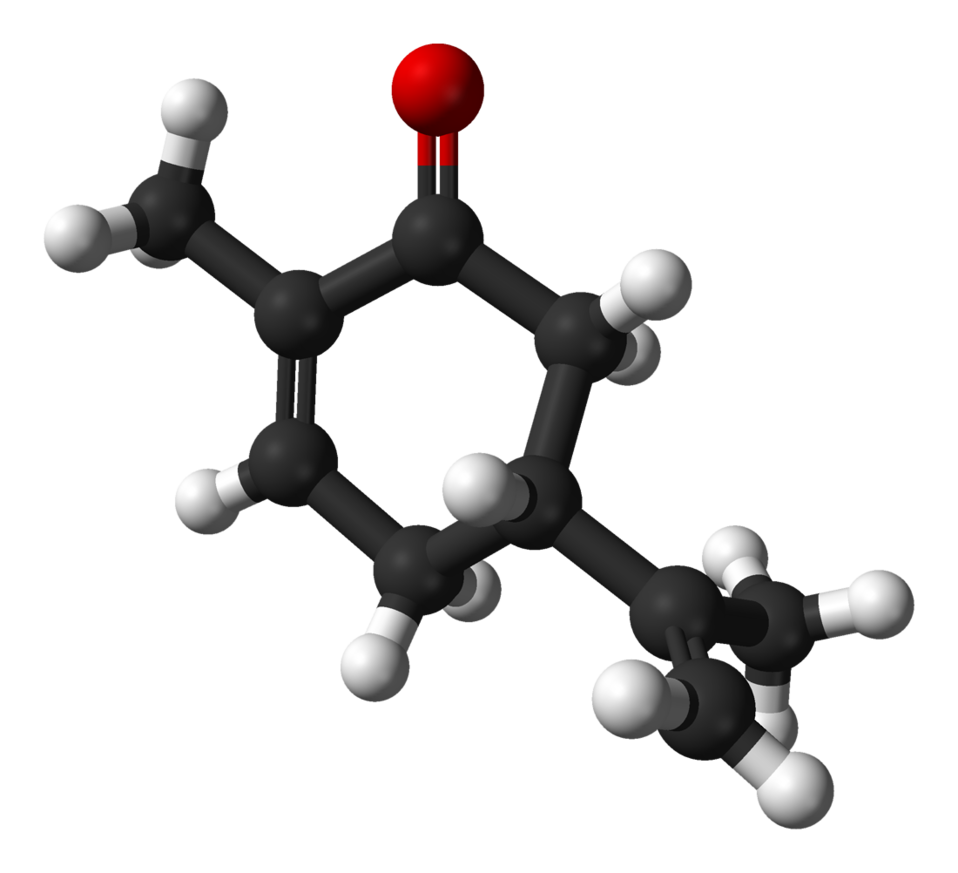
Ball-and-stick model of the (R)-(−) enantiomer of carvone (AKA L-carvone), as found in the crystal structure. X-ray crystallographic data from Acta Cryst. (1997). B53, 702-707. Model constructed in CrystalMaker 8.1. Image generated in Accelrys DS Visualizer.